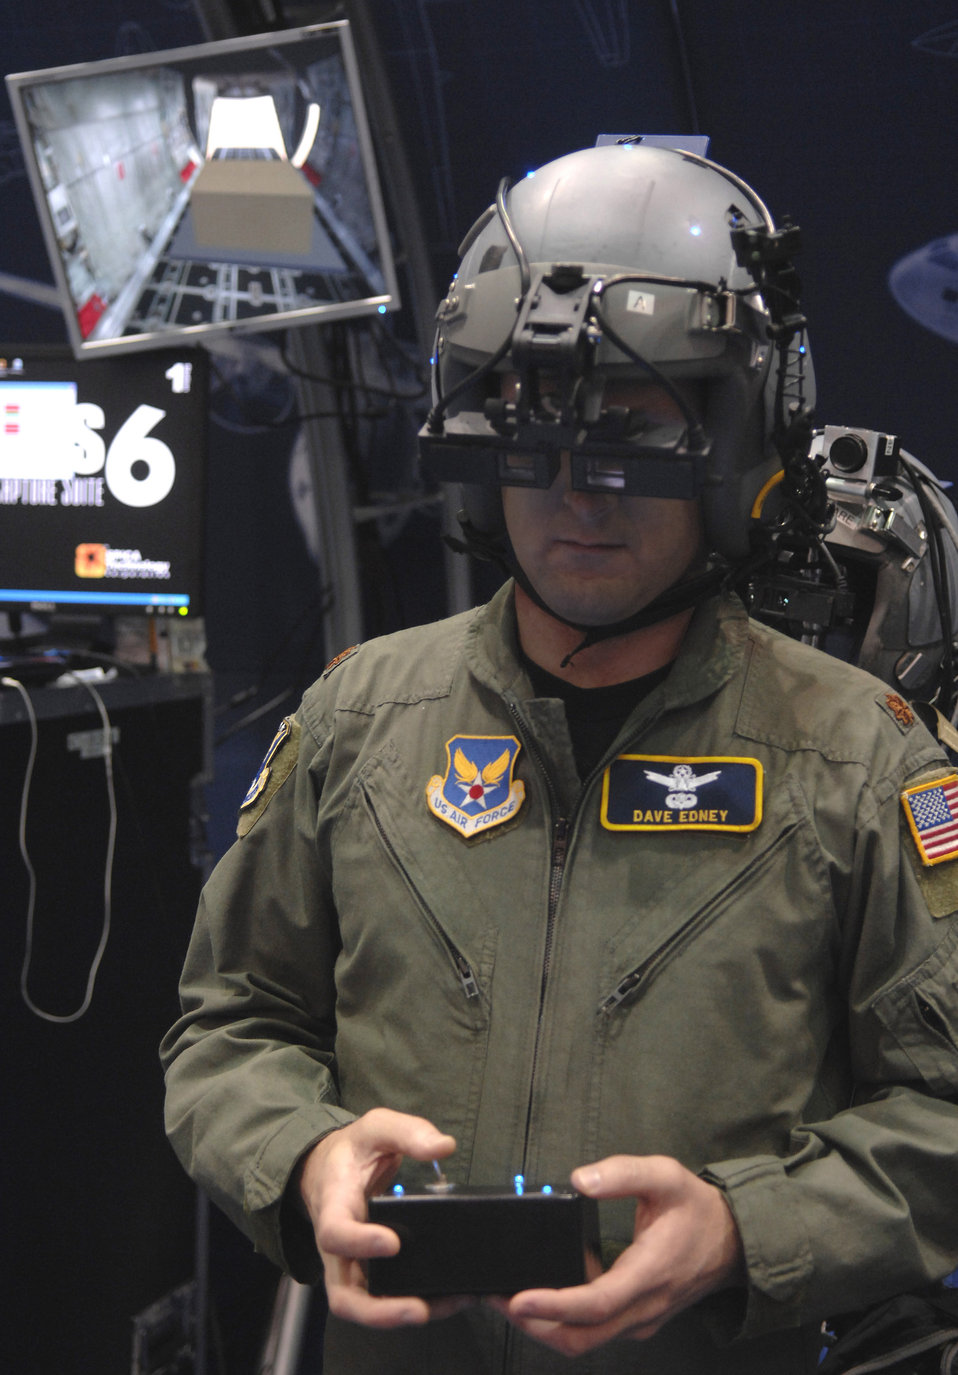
Technology conference powers down

Maj. Dave Edney tries on the enhanced loadmaster training module that uses augmented reality Nov. 30 during the Interservice/Industry Training, Simulation and Education Conference in Orlando, Fla. The augmented reality allows trainees to see real and virtual reality as the visual display adds different scenarios to training.